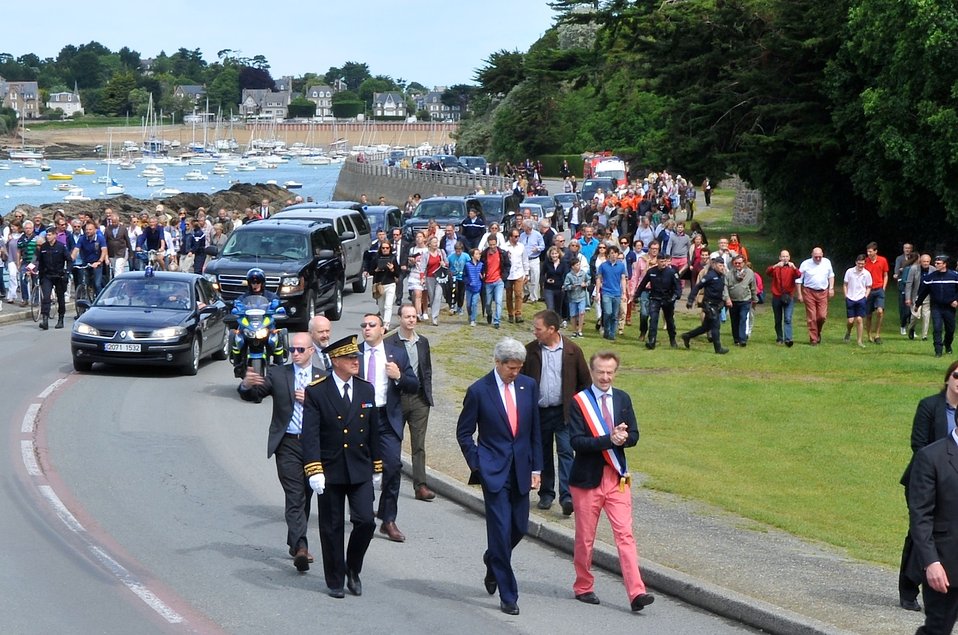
Secretary Kerry, Mayor Denby-Wilkes Lead Residents on Walk Through Brittany Town

U.S. Secretary of State John Kerry and Mayor Vincent Denby-Wilkes of Saint Briac, France, lead residents of the Brittany community on a walk from a memorial recalling three Americans who died liberating it from Nazi occupiers to the town square for a ceremony commemorating the 70th anniversary of D-Day, on June 7, 2014.